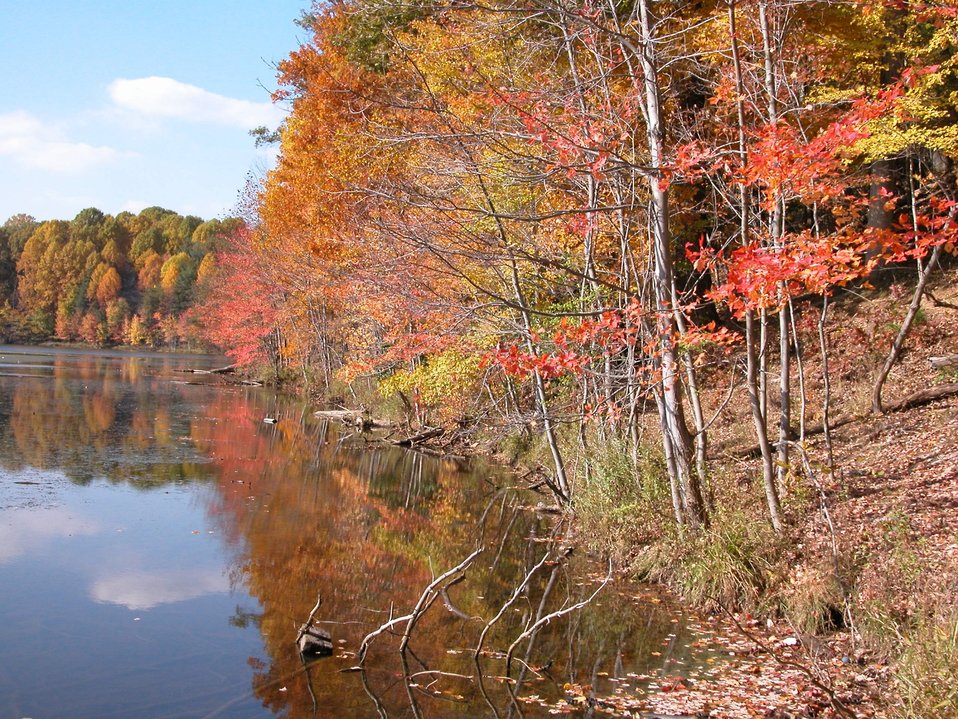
Shoreline of Clopper Lake on an autumn afternoon.